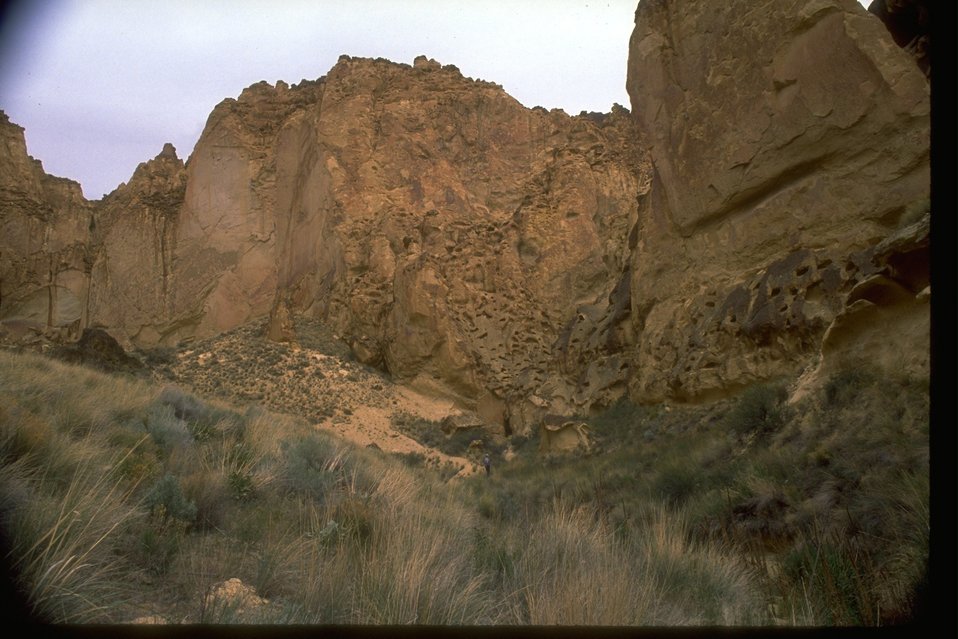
Leslie Gulch Series.